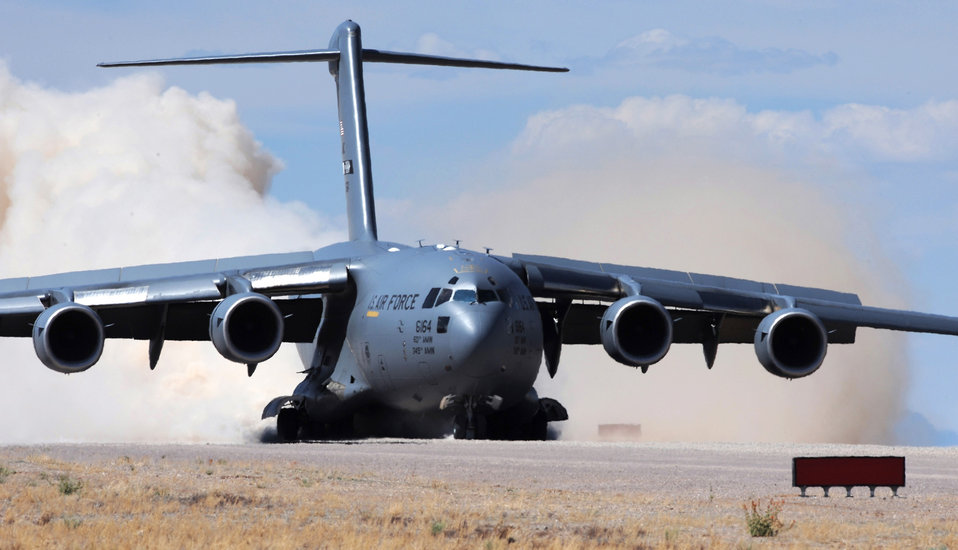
Aug. 23 airpower summary

The C-17 Globemaster III is capable of rapid strategic delivery of troops and all types of cargo to main operating bases or directly to forward bases in the deployment area. The aircraft can perform tactical airlift and airdrop missions and can also transport litters and ambulatory patients during aeromedical evacuations when required.